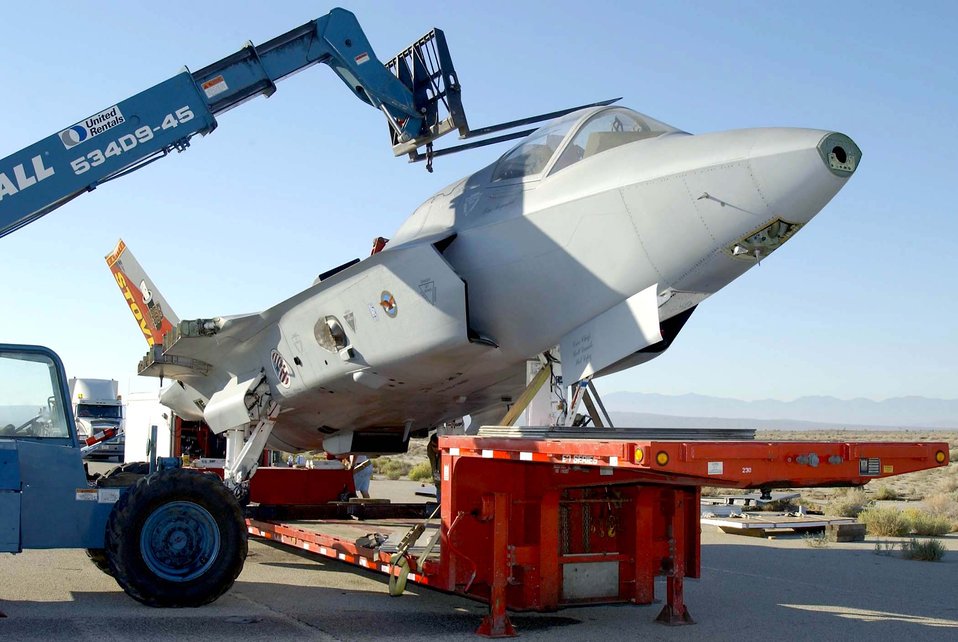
Road trip

Following the completion of flight tests, X-35 Joint Strike Fighter demonstrator aircraft were retired. The X-35A/B is disassembled and placed on a truck headed to the Smithsonian Institute's National Air and Space Museum in Washington, D.C. It is on display at the Stephen F. Udvar-Hazy Center near the Dulles International Airport in Virginia.